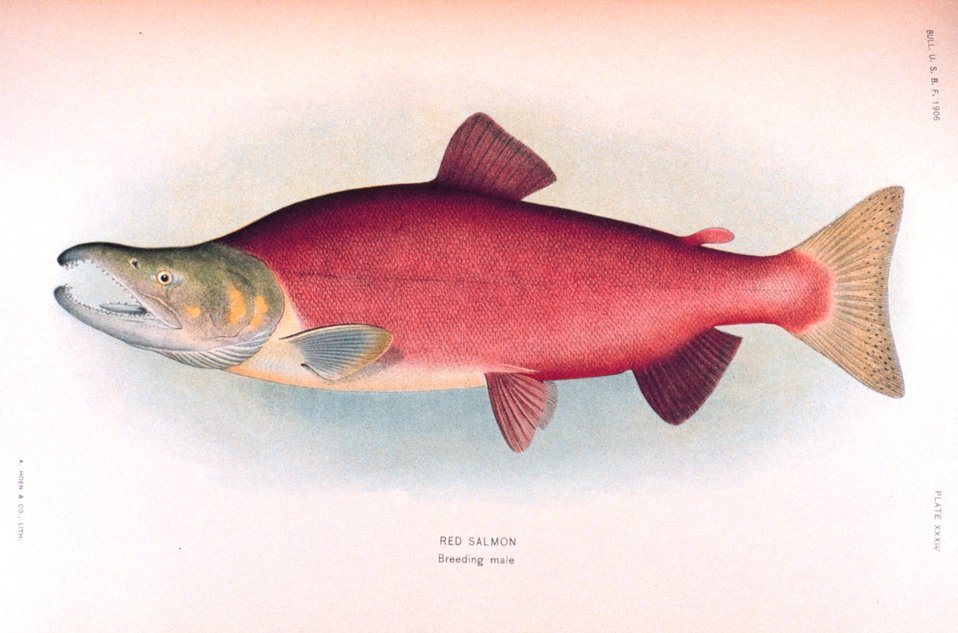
Red salmon, breeding male. In: 'The Fishes of Alaska.' Bulletin of the Bureau of Fisheries, Vol. XXVI, 1906. P. 360, Plate XXXIV.